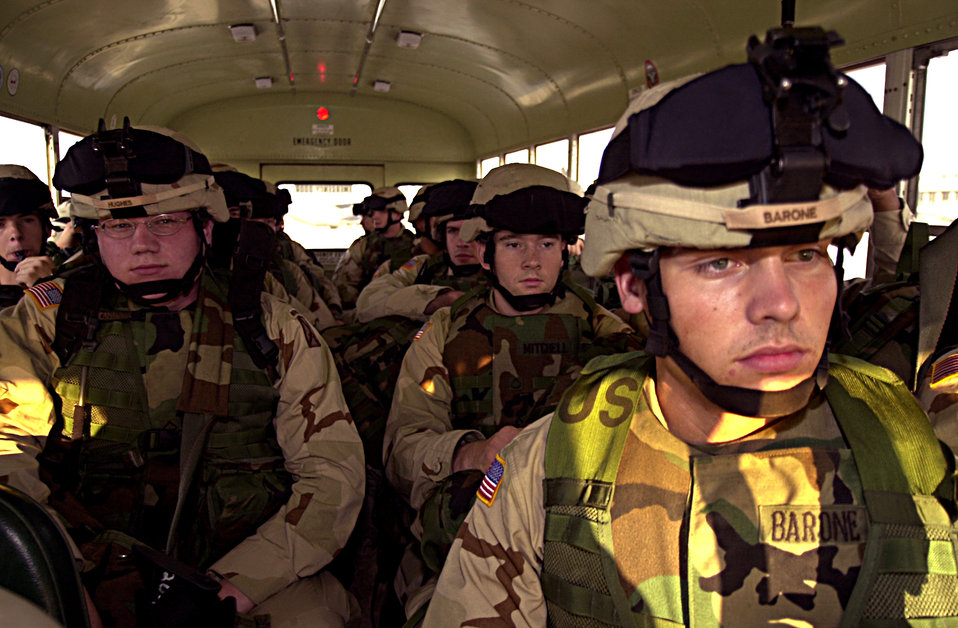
Guests for a day

GANCI AIR BASE, Kyrgyzstan -- Private 1st Class Michael Barone (right) and the rest of Charlie Company, 2-22nd Infantry Regiment, were guests here for about 12 hours before leaving for Afghanistan early Aug. 2 to support Operation Enduring Freedom. The soldiers are from Fort Drum, N.Y. They arrived en masse via contract airlift, but departed in groups of 30 to 40 on board C-130 Hercules transports. Ganci Air Base is the primary hub for all OEF passengers and cargo.